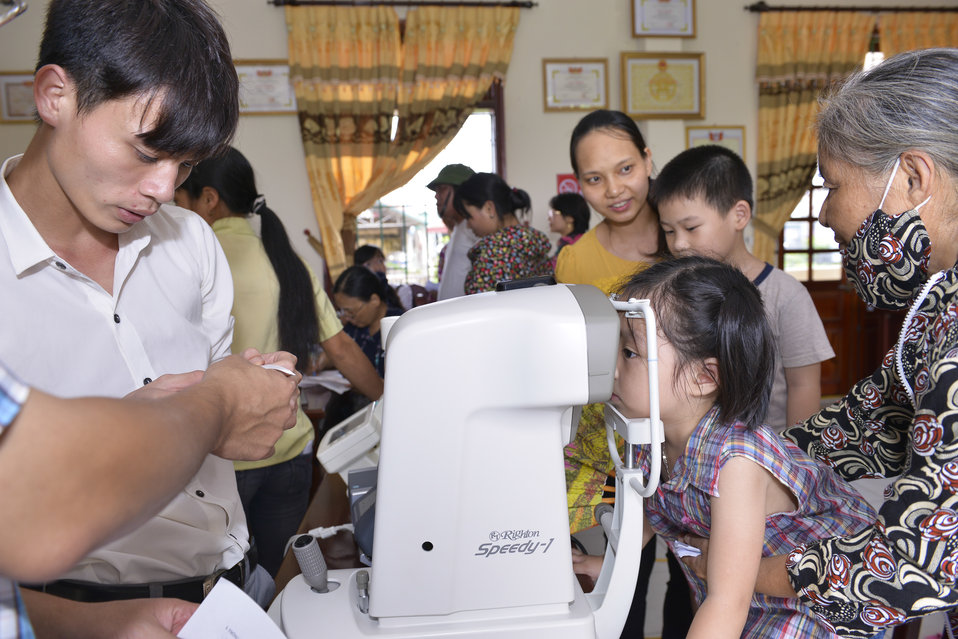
Eye screening for kindergarten children in Quoc Oai district of Hanoi

Quoc Oai, Hanoi. May 31, 2014.